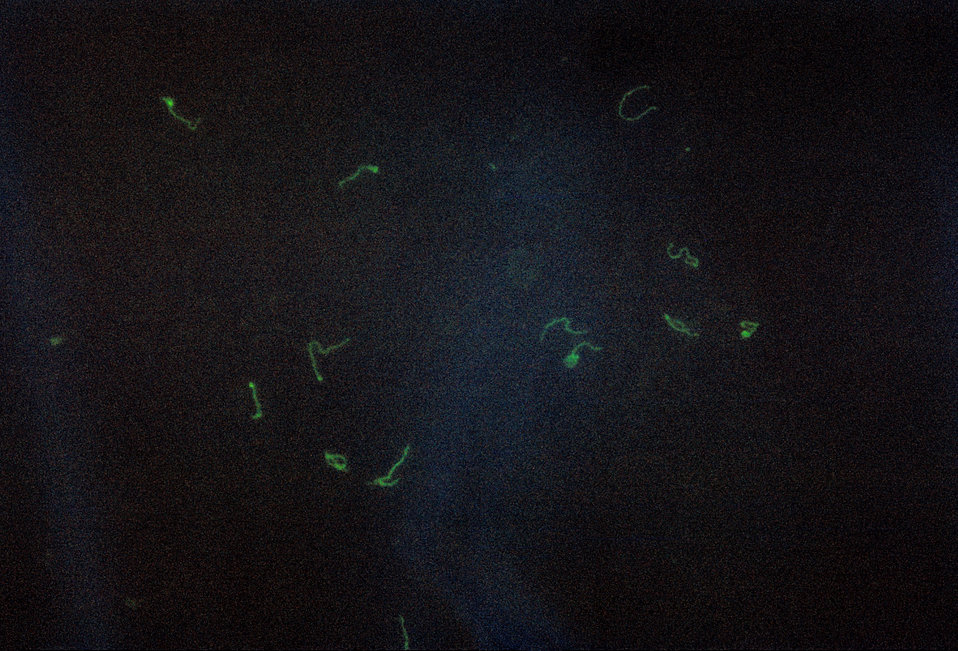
Treponema pallidum, IFA stain for Fluorescent Treponemal Antibody (FTA) antigen.